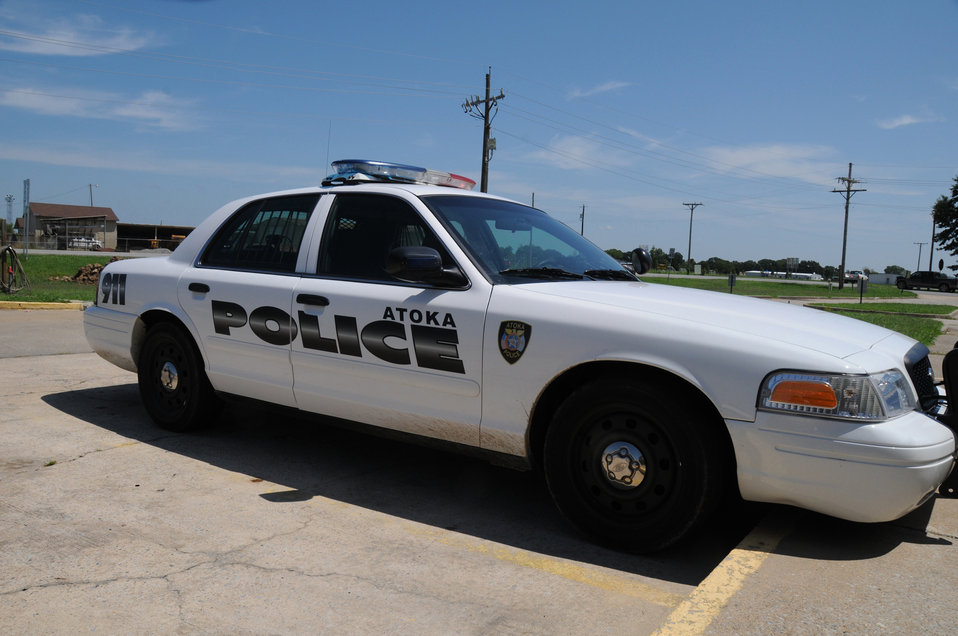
The U.S. Department of Agriculture (USDA) Rural Development (RD) Housing and Community Facilities Programs provided funding to the Atoka, Oklahoma police department through the American Recovery and Reinvestment Act (ARRA) on August 12, 2009.